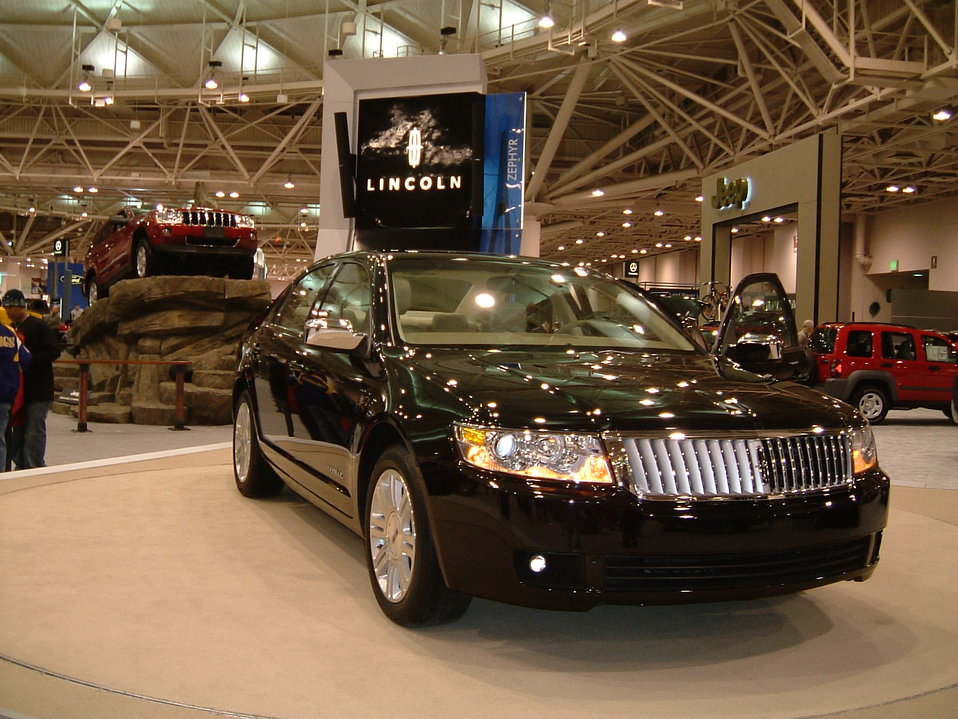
Lincoln Zephyr (2006)